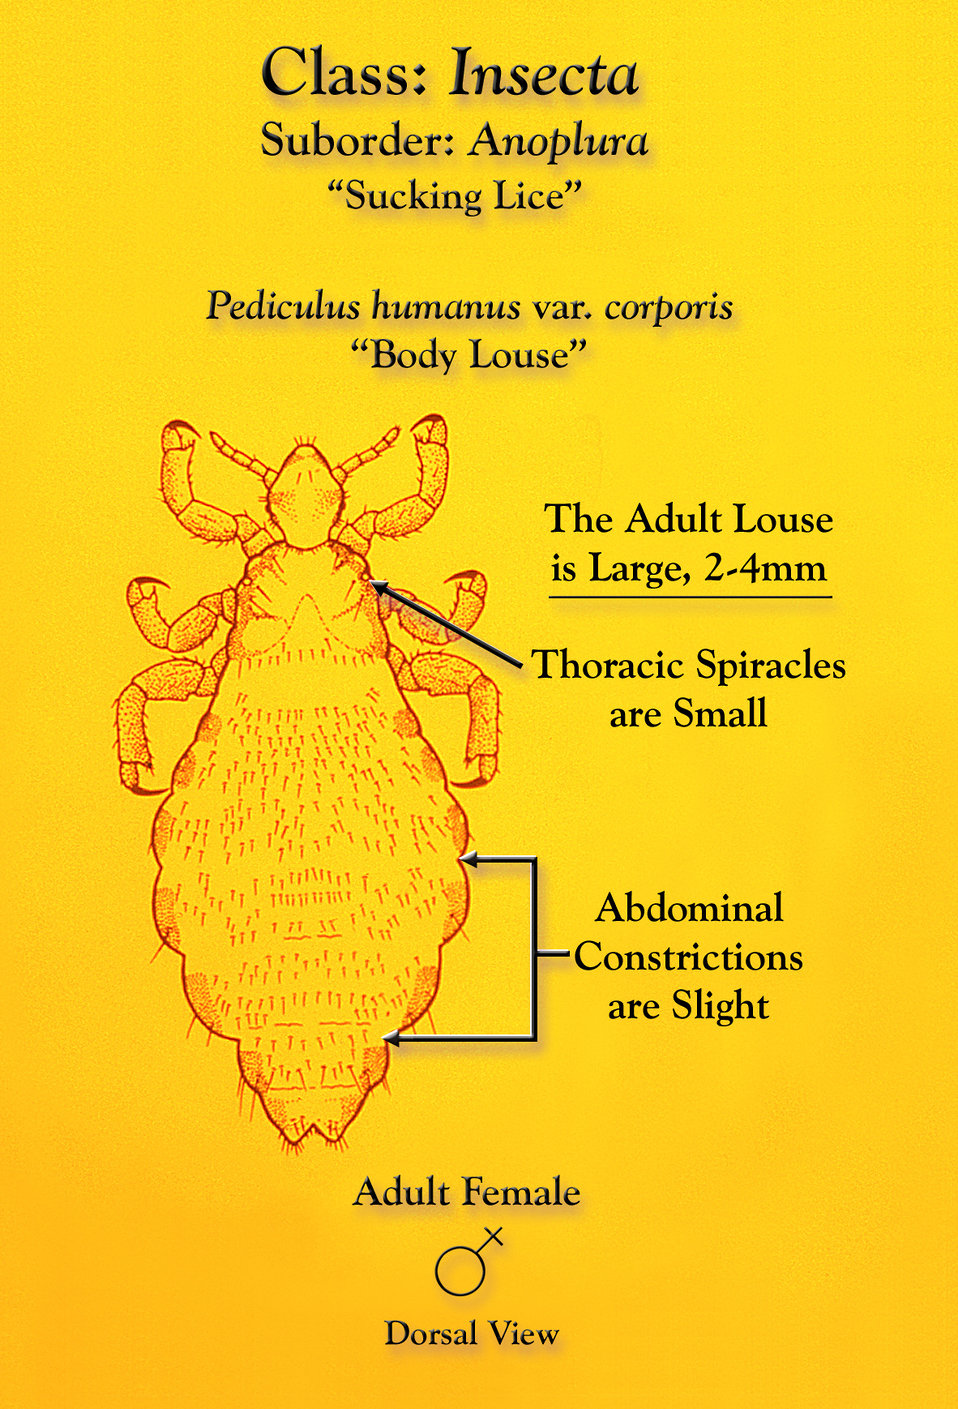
This illustration depicts some of the morphologic characteristics of a female body louse, Pediculus humanus var. corporis from a dorsal view.